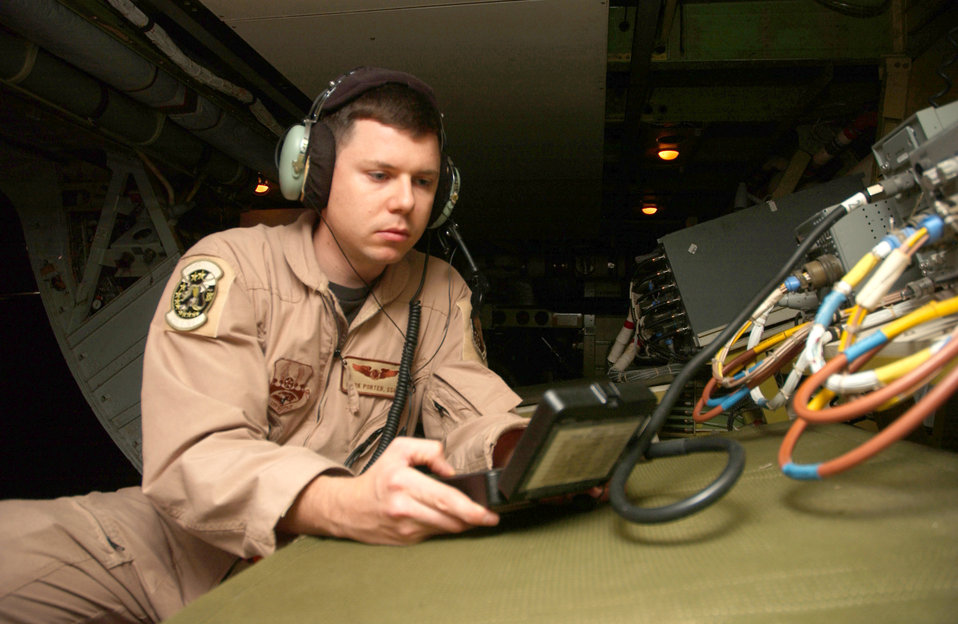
Sailing the skies

Staff Sgt. Mark Porter uploads radio software onto an E-8C Joint STARS aircraft prior to departure Nov. 30 in Southwest Asia. Sergeant Porter is assigned to the 12th Expeditionary Airborne Command and Control Squadron. The flight over Iraq marked 20,000 flying hours in support of Operation Iraqi Freedom by the Boeing 707 equipped with the Joint Surveillance Target Attack Radar System. Accomplishing that feat since early 2003 have been the combined efforts of the 12th EACCS, 16th EACCS and 128th EACCS, all from Robins Air Force Base, Ga., during alternating 90-day rotations. The JSTARS is an airborne battle management aircraft specializing in command and control, and intelligence, surveillance and reconnaissance gathering. Information gathered is passed in real time to servicemembers on the ground conducting combat operations.